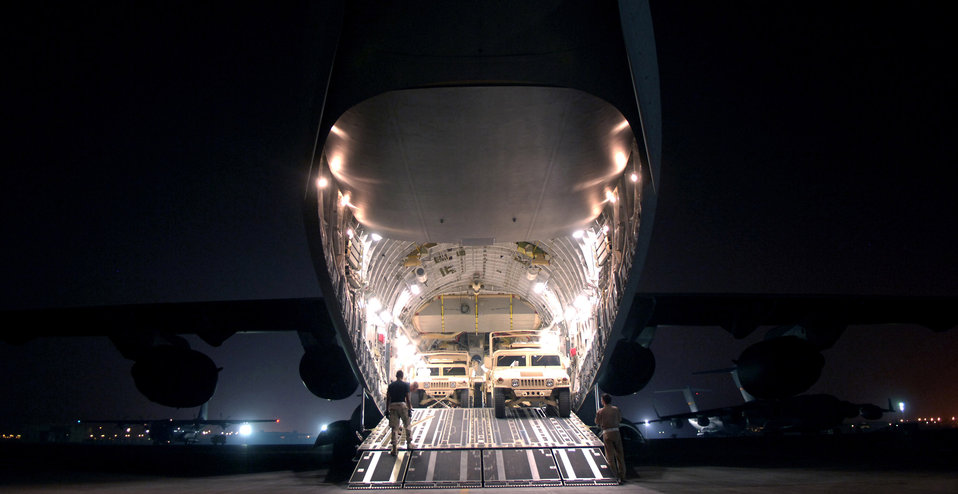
Airpower Summary for Sept. 24, 2007

Airmen load humvees into a C-17 Globemaster III at a base in Southwest Asia. Globemasters provide intra-theater heavy airlift support to help sustain operations throughout Afghanistan, Iraq and the Horn of Africa.